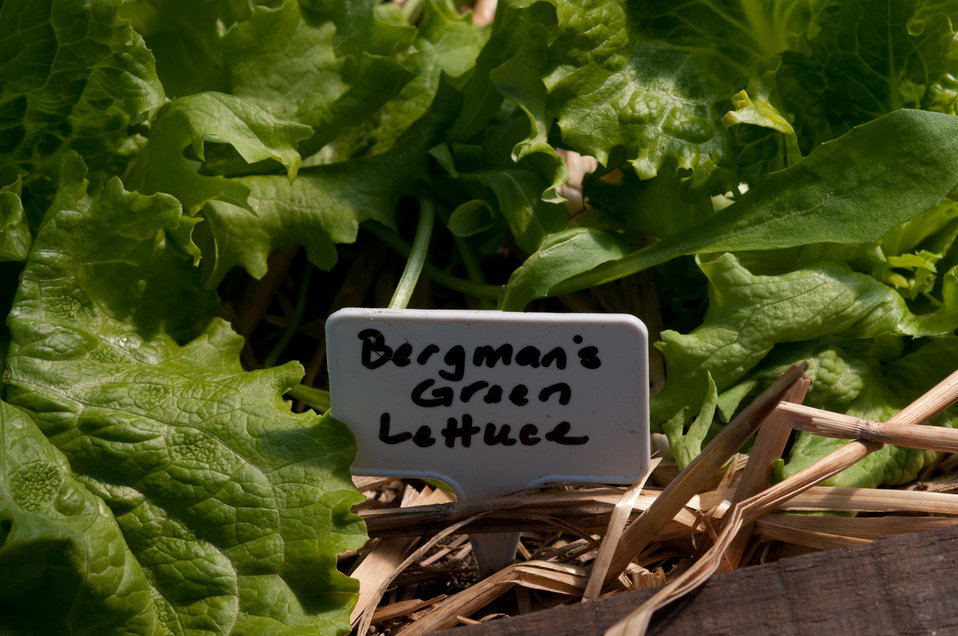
Bergman's Green Lettuce grows in The People's Garden at the U.S. Department of Agriculture (USDA), Washington D.C., on Thursday, March 17, 2011. Volunteers pitch in several times a week, to weed, mulch, plant, water and what ever it takes to grow a wide variety of produce. Although a few are ornamental, most are destined for charity kitchens. Located on the corner of Jefferson Drive, SW and 12th St. SW, people often stop to ask questions about the garden. Part of the volunteers’ training is to be a spokesperson for the People's Garden Initiative, an effort by the USDA that challenges its employees to establish People's Gardens at USDA facilities worldwide or help communities create gardens. People's Gardens vary in size and type, but all have a common purpose - to help the community and the environment.